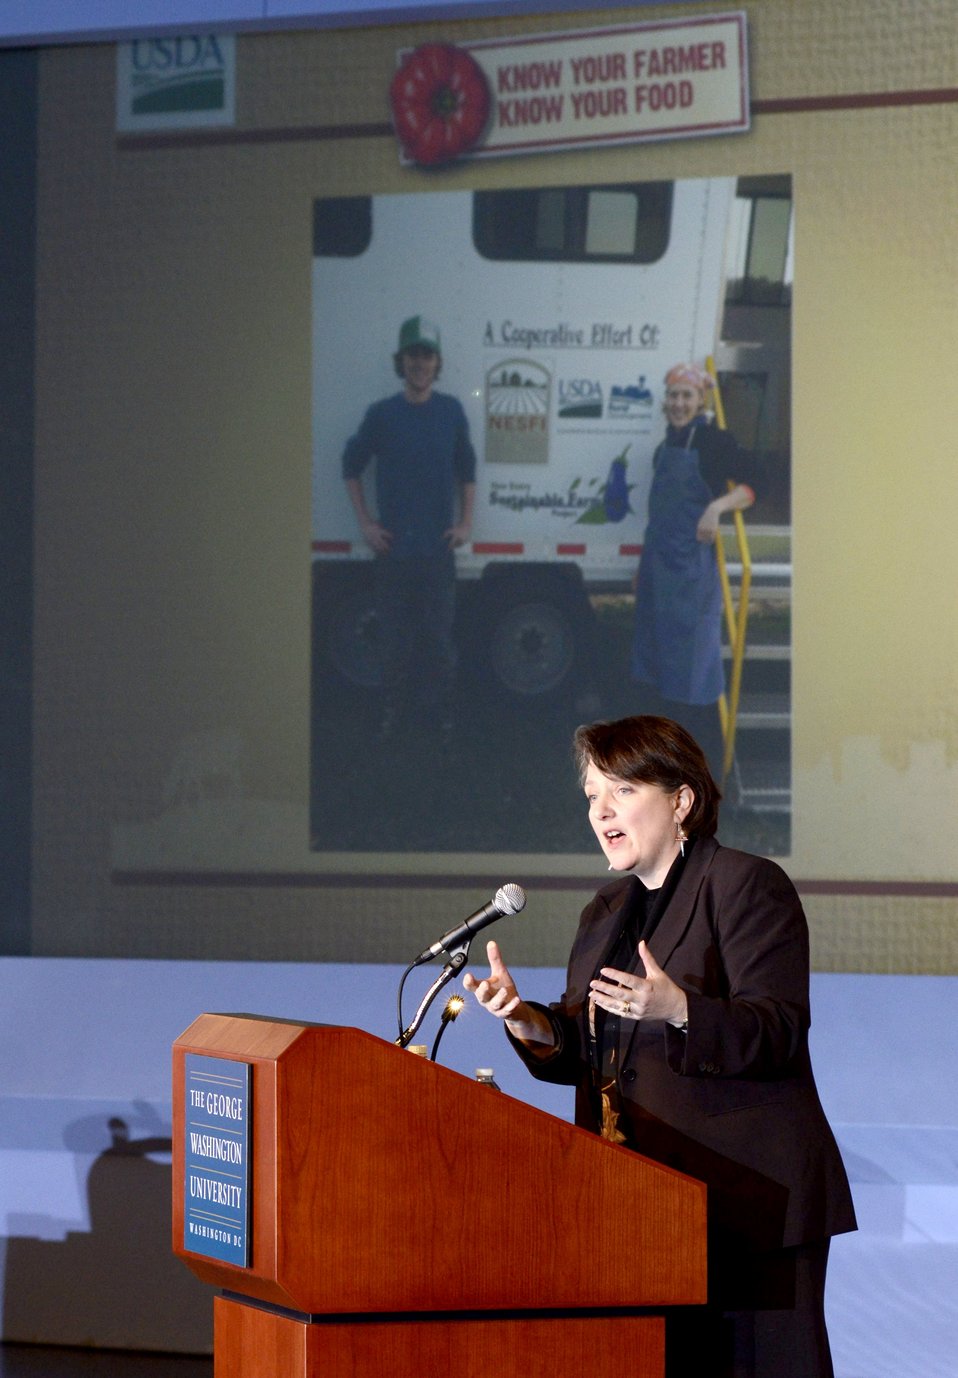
Agriculture Deputy Secretary Dr. Kathleen Merrigan keynote speaker 'Shaping the Farm Bill for a Sustainable Future.' Forum at The Trachtenberg School of Public Policy and Public Administration, George Washington University in Washington, D.C., on Thursday, March 1, 2012.